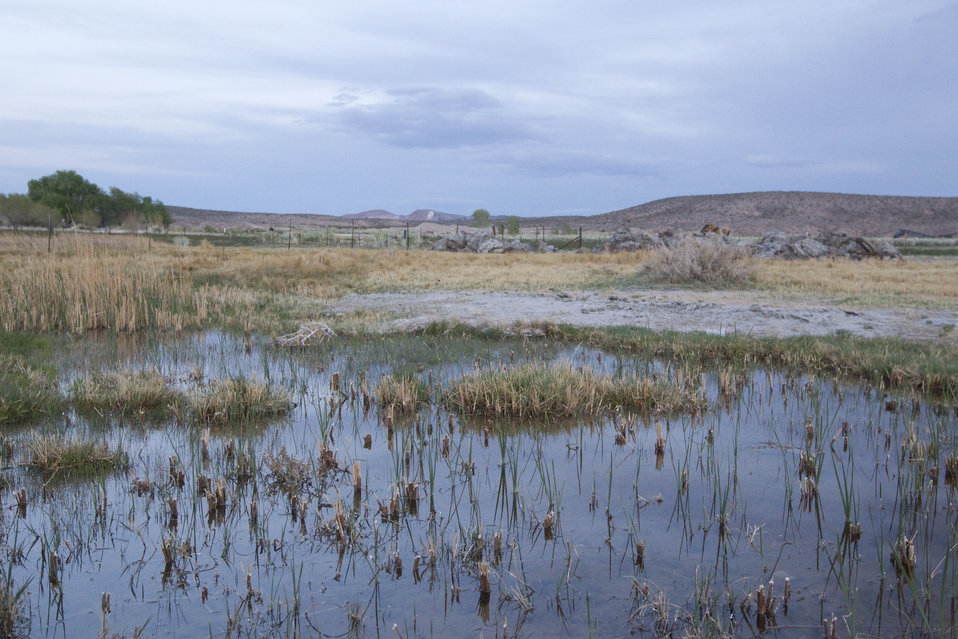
Amargosa Toad Breeding Habitat

Partners for Fish and Wildlife Program. Beatty, Nevada.